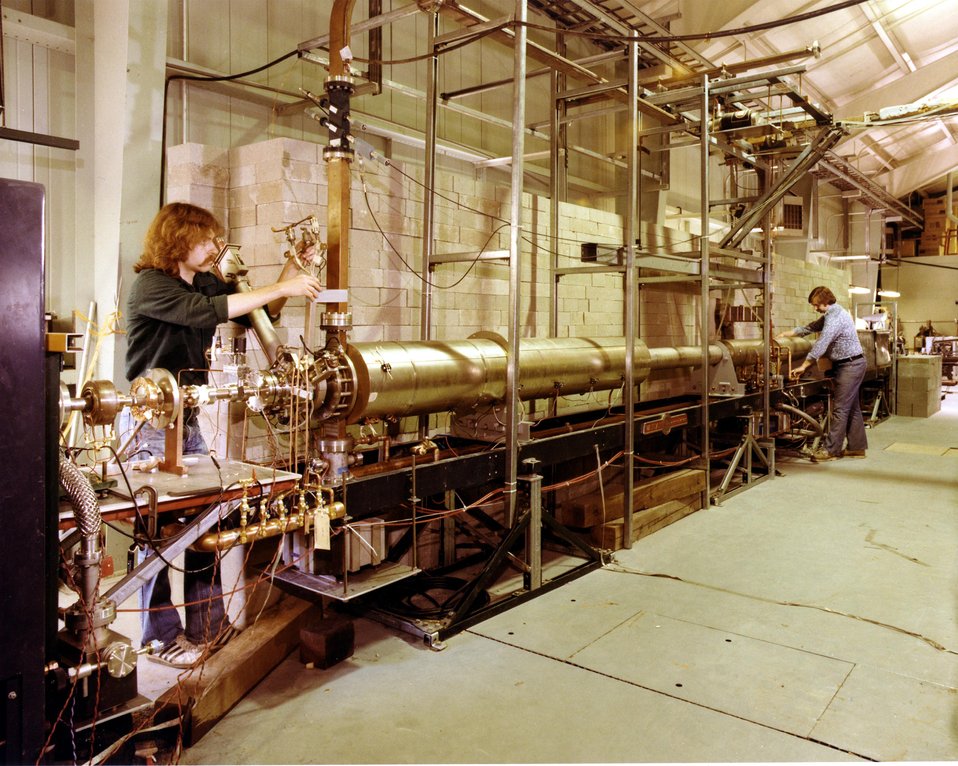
50 MEV LINEAR ACCELERATOR ('LINAC') DURING RECONDITIONING.

THE NSLS WILL ACCELERATE AND STORE ELECTRONS AT A SPEED CLOSE TO THAT OF LIGHT TO PRODUCE AN ENTIRE SPECTRUM OF RADIATION, FROM INFRARED THROUGH X-RAYS, FOR UNIQUE APPLICATIONS IN MANY FIELDS OF SCIENCE. THE FACILITY WILL CONSIST OF TWO ELECTRON STORAGE RINGS. THE SMALLER RING WILL ACCELERATE ELECTRONS TO 700 MILLION ELECTRON VOLTS TO PRODUCE ULTRAVIOLET RADIATION, AND THE LARGER RING WILL ACCELERATE ELECTRONS TO 2500 MILLION ELECTRON VOLTS TO PRODUCE X-RAYS. THE ULTRAVIOLET LIGHT CAN BE USED TO STUDY: CHEMICAL REACTIONS AND STRUCTURES, THE PROPERTIES OF PURE METALS, ALLOYS, AND INSULATING MATERIALS, AND THE TRANSFER OF ENERGY IN BIOLOGICAL SYSTEMS. X-RAY LITHOGRAPHY MAY BE USED BY THE ELECTRICAL INDUSTRY IN THE PRODUCTION OF MICROSCOPIC PRINTED CIRCUITS FOR COMPUTERS AND MICROPROCESSORS. X-RAY MICROSCOPY COMPLEMENTS ELECTRON MICROSCOPY, PERMITTING OPERATIONS THAT WOULD BE IMPOSSIBLE WITH AN ELECTRON MICROSCOPE.